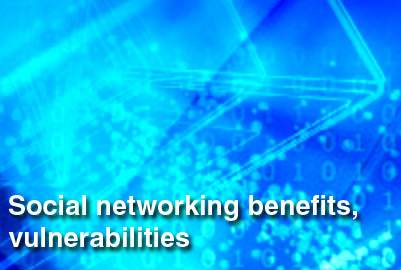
Pentagon officials weigh social networking benefits, vulnerabilities

Defense Department officials here are weighing the benefits of social networking and other Web 2.0 platforms against potential security vulnerabilities they create.